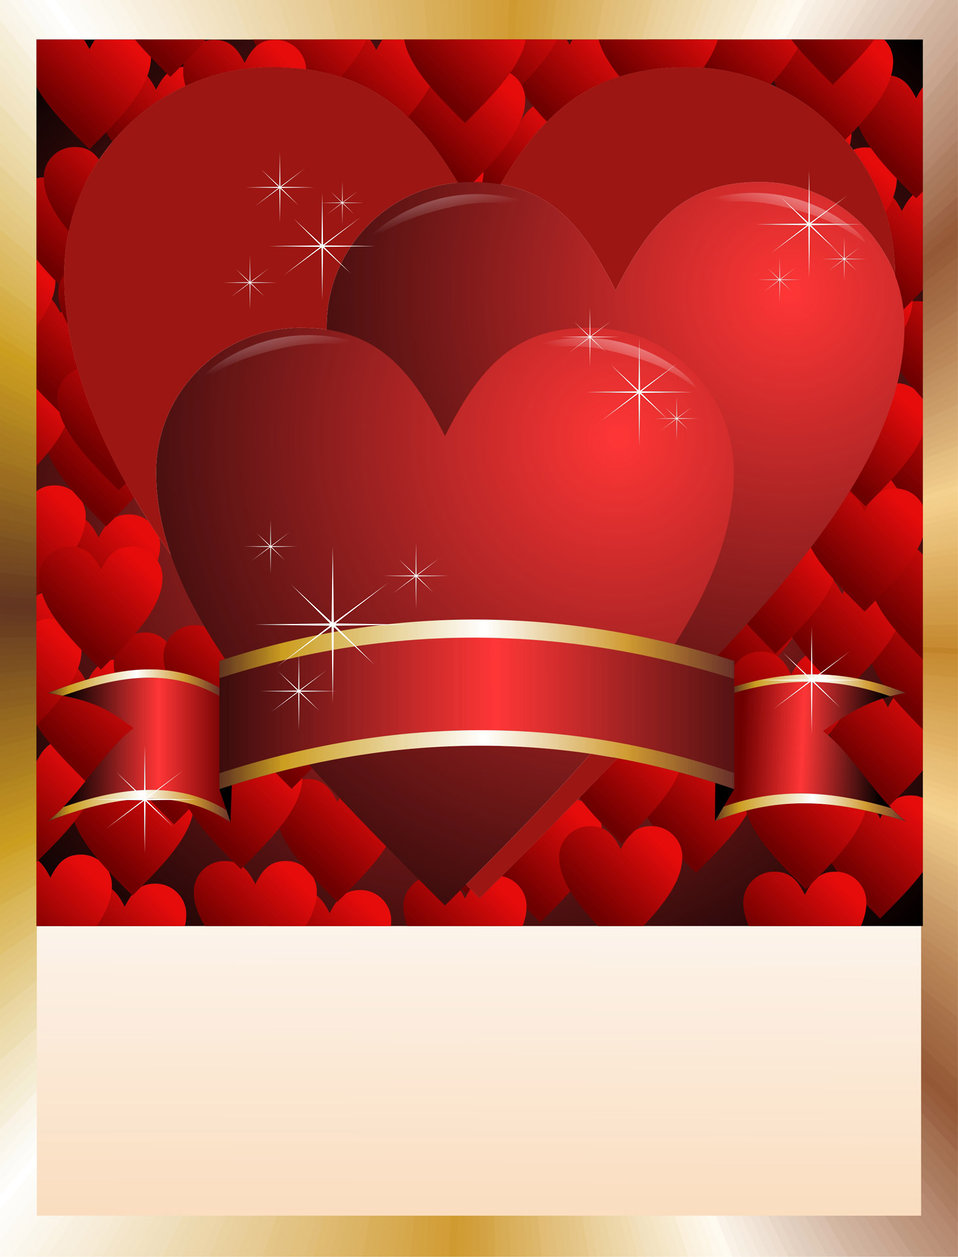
Festive background

Elegant background with hearts.